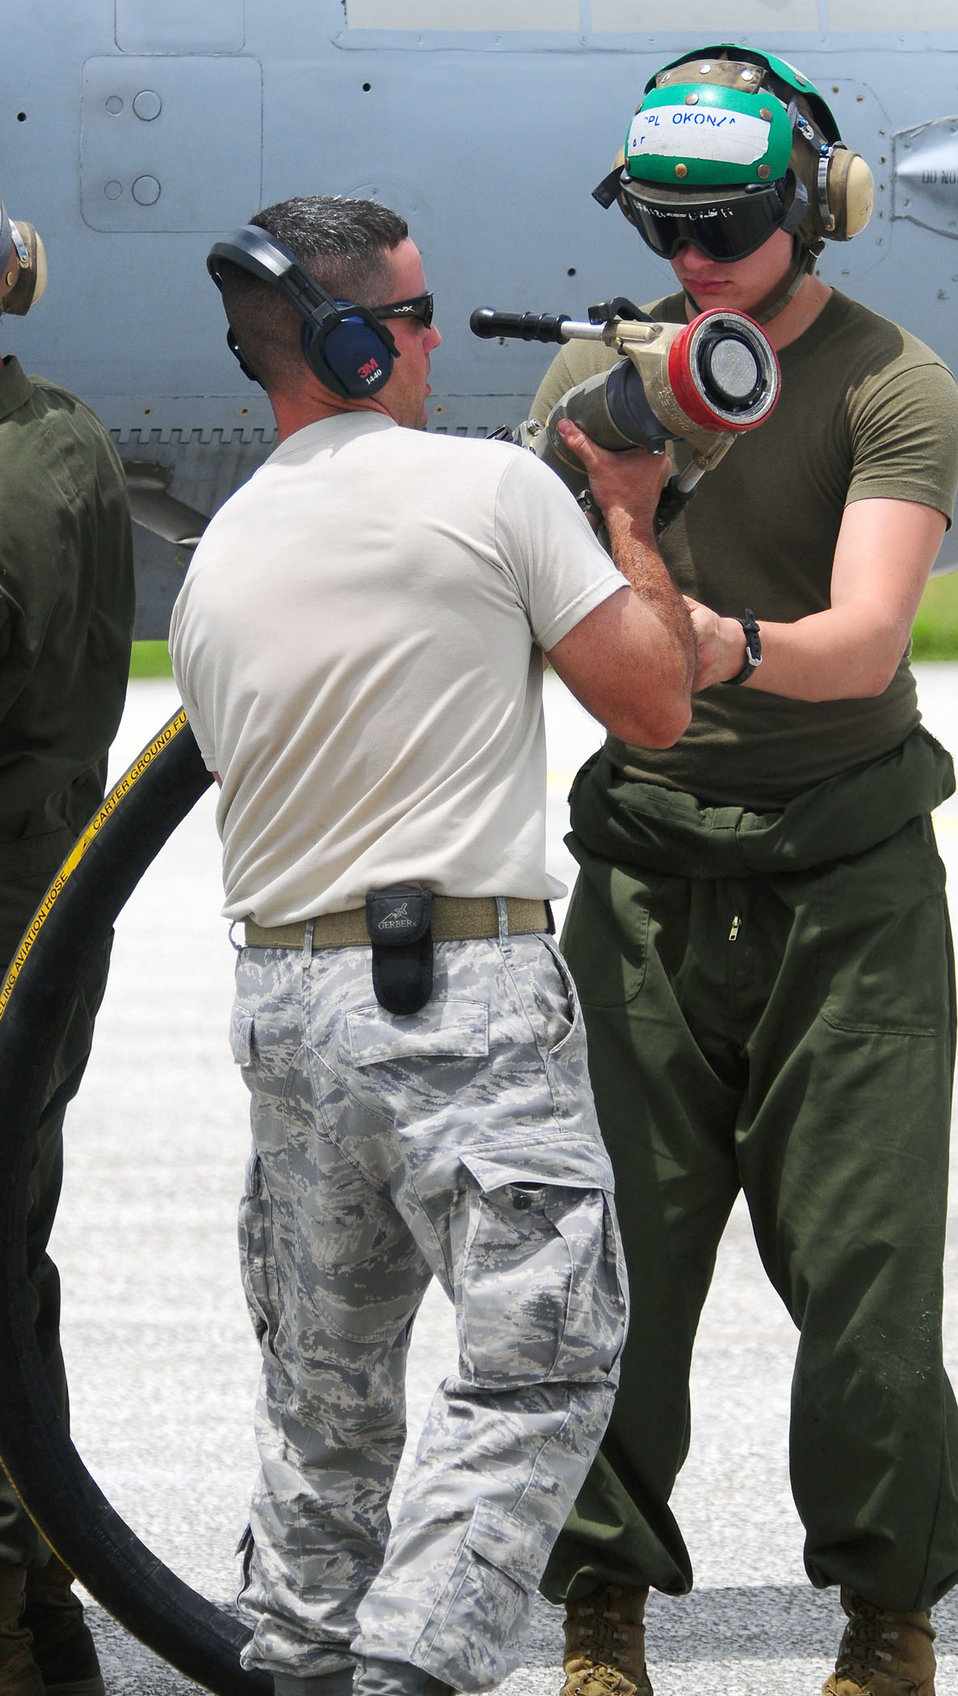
Andersen AFB Hosts Valiant Shield 2010

Members of the 36th Logistics Readiness Squadron and Marine Wing Support Squadron 171 perform a hotpit refuel on an F/A 18 Delta Hornet during Valiant Shield 2010 Sept. 14, 2010, at Andersen Air Force Base, Guam. Valiant Shield is an integrated joint training and interoperability exercise among U.S. military forces.